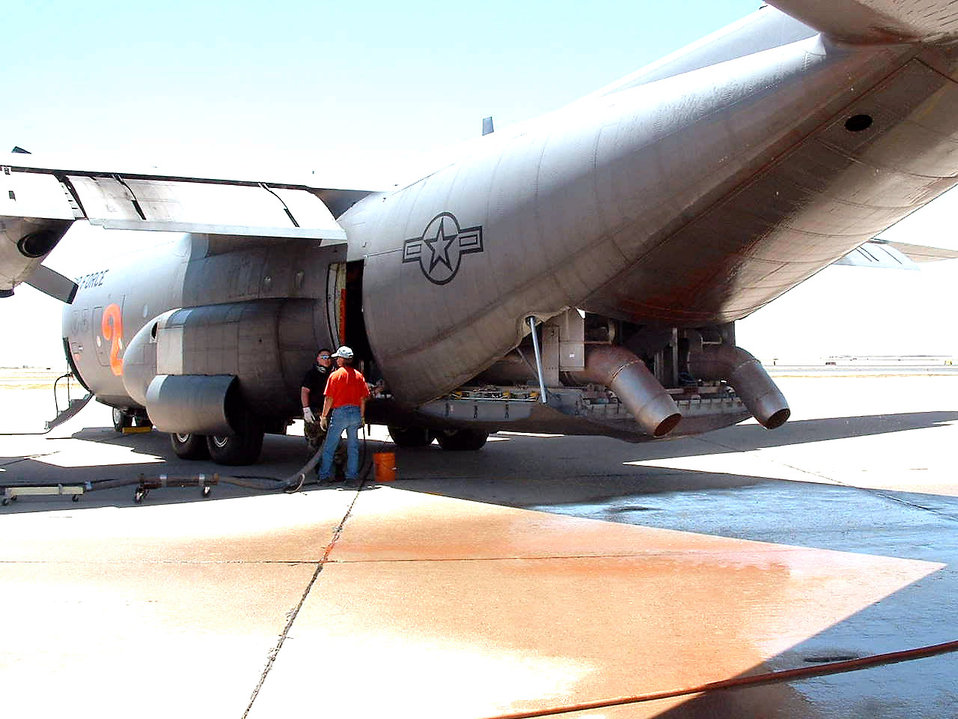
Airmen support California firefighting for sixth day

Airmen of the 302nd Air Expeditionary Group operating out of McClellan Airfield in Sacramento, Calif., and are flying C-130 Hercules equipped with the Modular Airborne Firefighting System used to disperse chemical fire retardants over wildfires to support fighting fires in California. The Airmen are in their sixth day of fighting fires throughout the state.